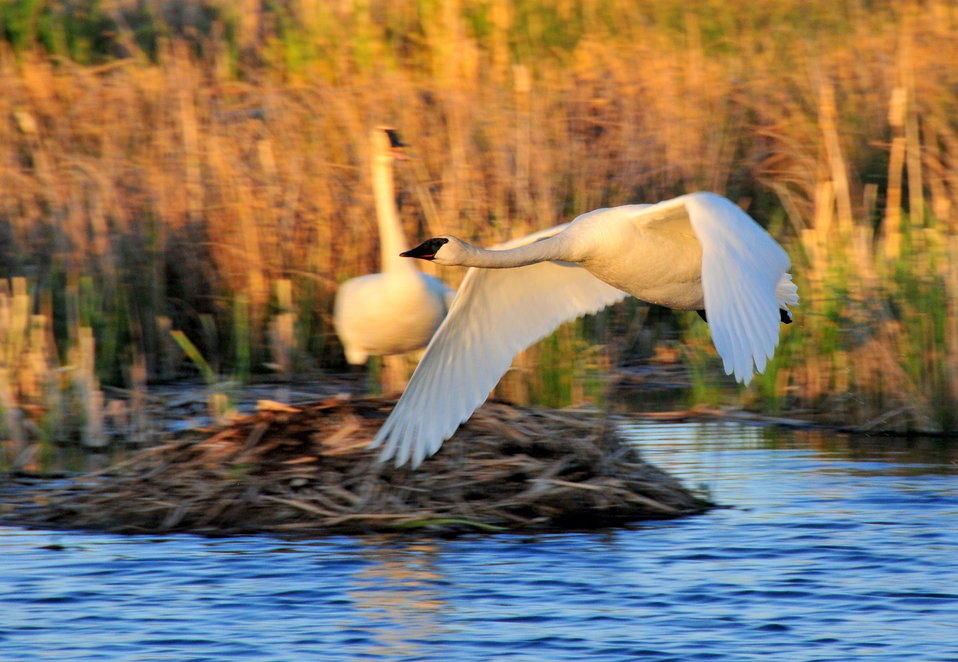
Trumpeter swan pair on Seedskadee National Wildlife Refuge 01

Trumpeter swan pair on Seedskadee NWR. This pair was taking a late afternoon break from nesting activities to feed and preen before returning to the nest. The male (Cob) was taking a flight around the perimeters of the pairs territory to reinforce that boundary with an adjacent swan pair.